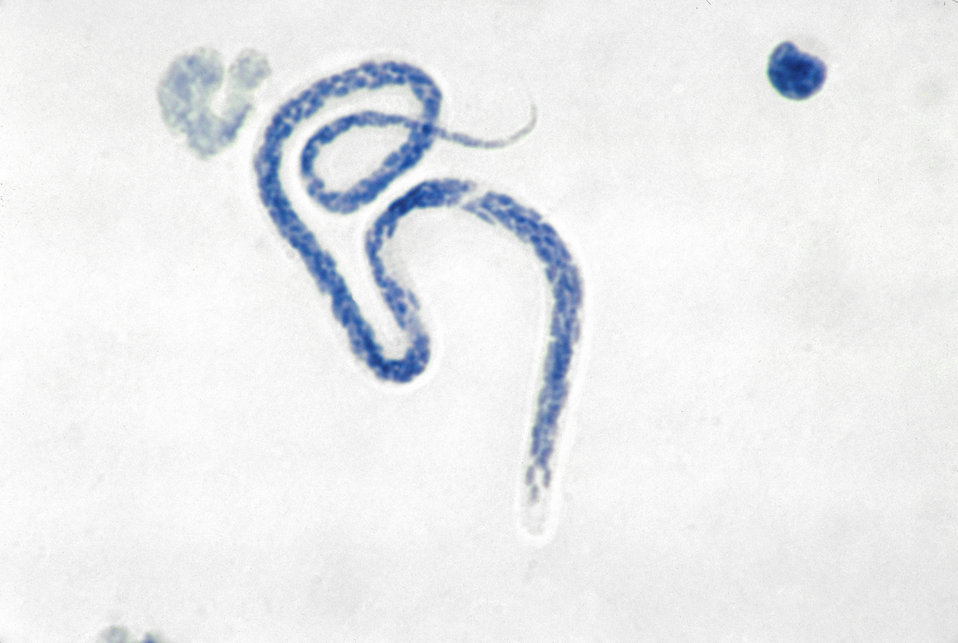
This photomicrograph depicts the Mansonella ozzardi microfilaria of this parasite.